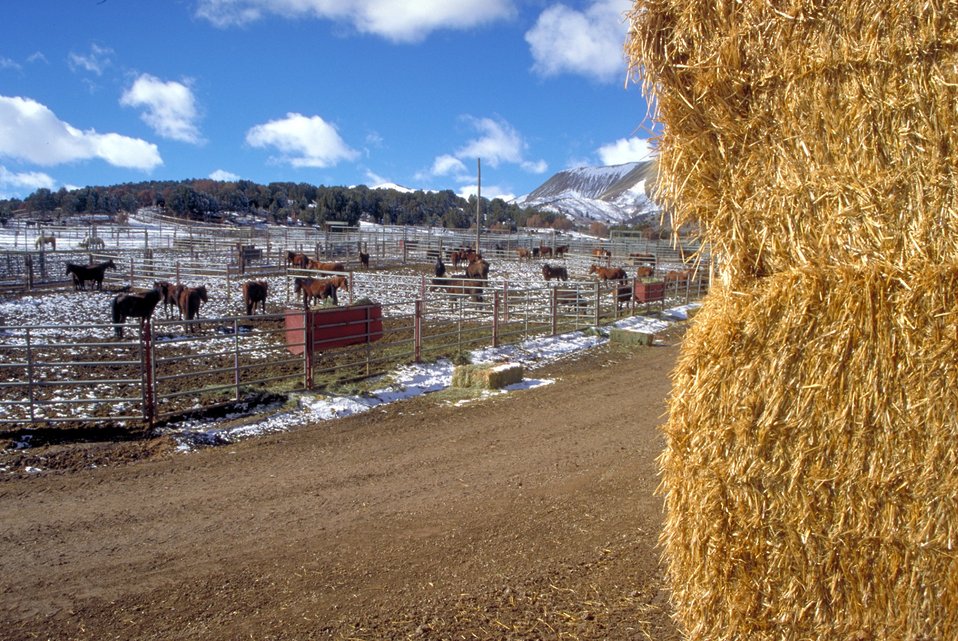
Salt Lake Regional Wild Horse and Burro Center Butterfield Canyon.